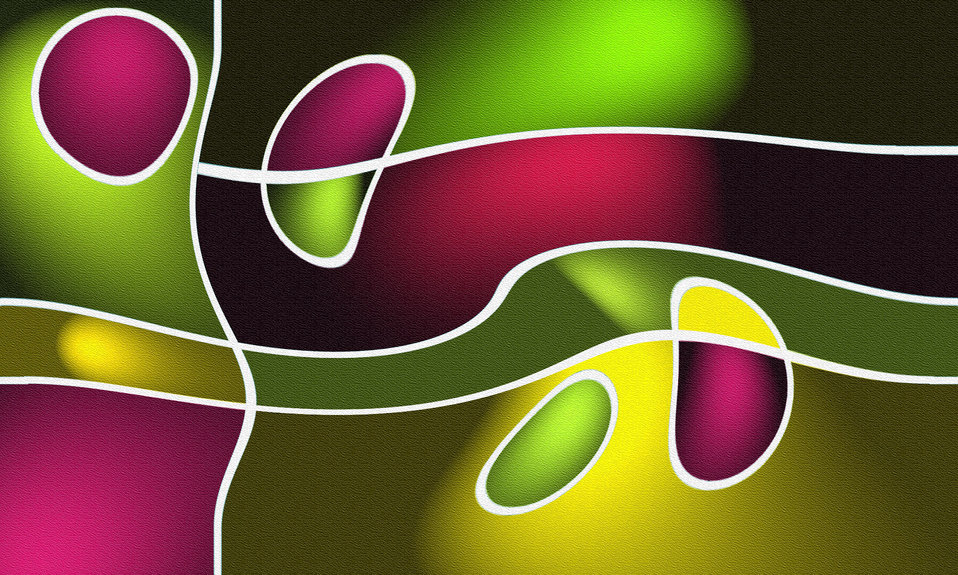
Dreams came true

Colored dream.